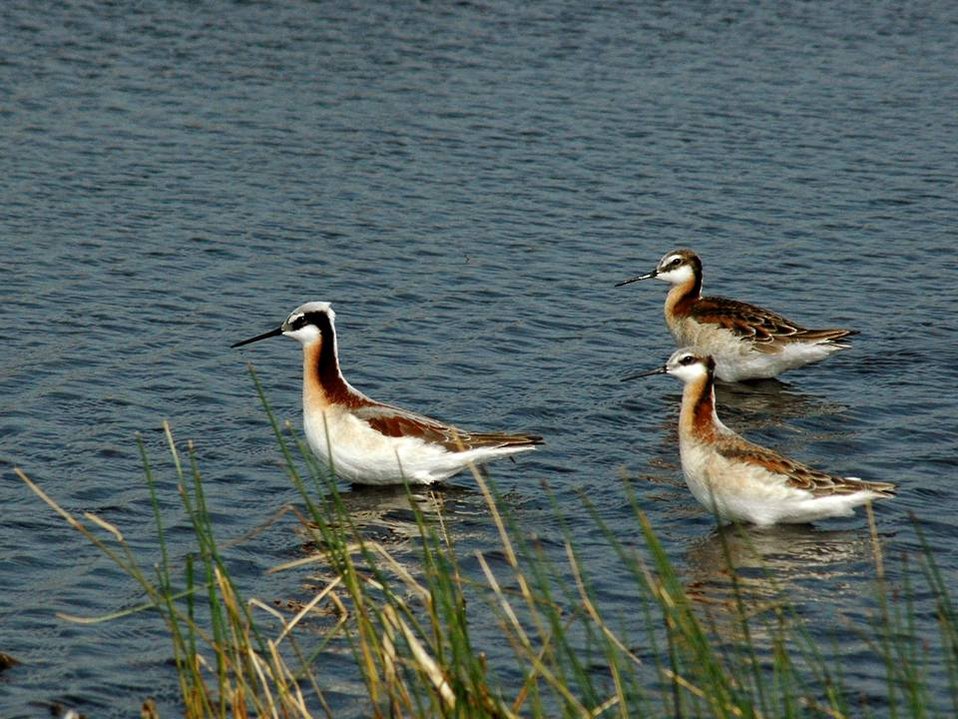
Wilson's phalarope

Three's company: Wilson's phalarope on a cropped wetland.